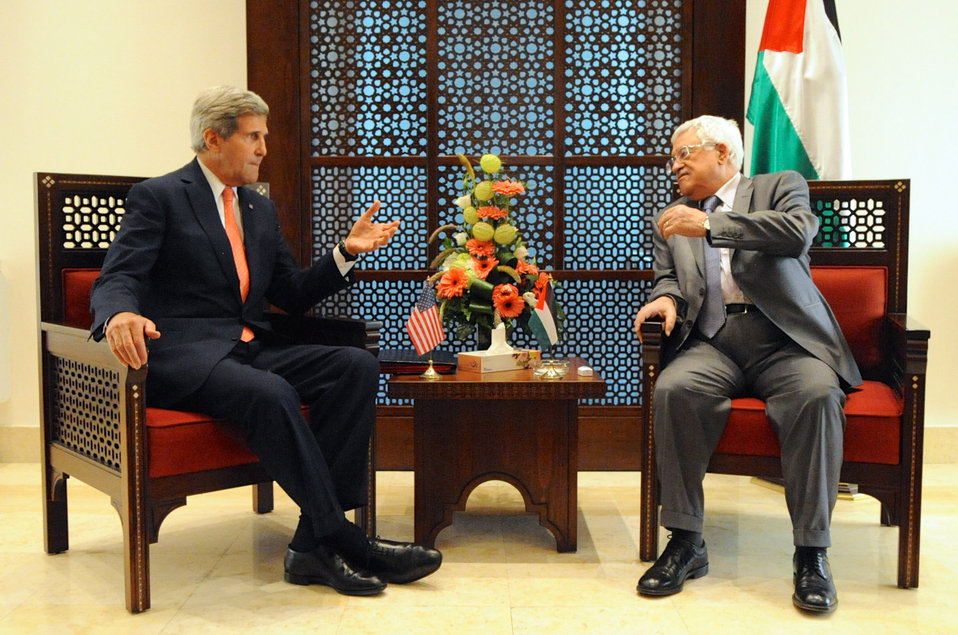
Secretary Kerry Meets With Palestinian Authority President Abbas

U.S. Secretary of State John Kerry speaks with Palestinian Authority President Mahmoud Abbas at the outset of a meeting focused on the Middle East peace process in Bethlehem, West Bank, on November 6, 2013.